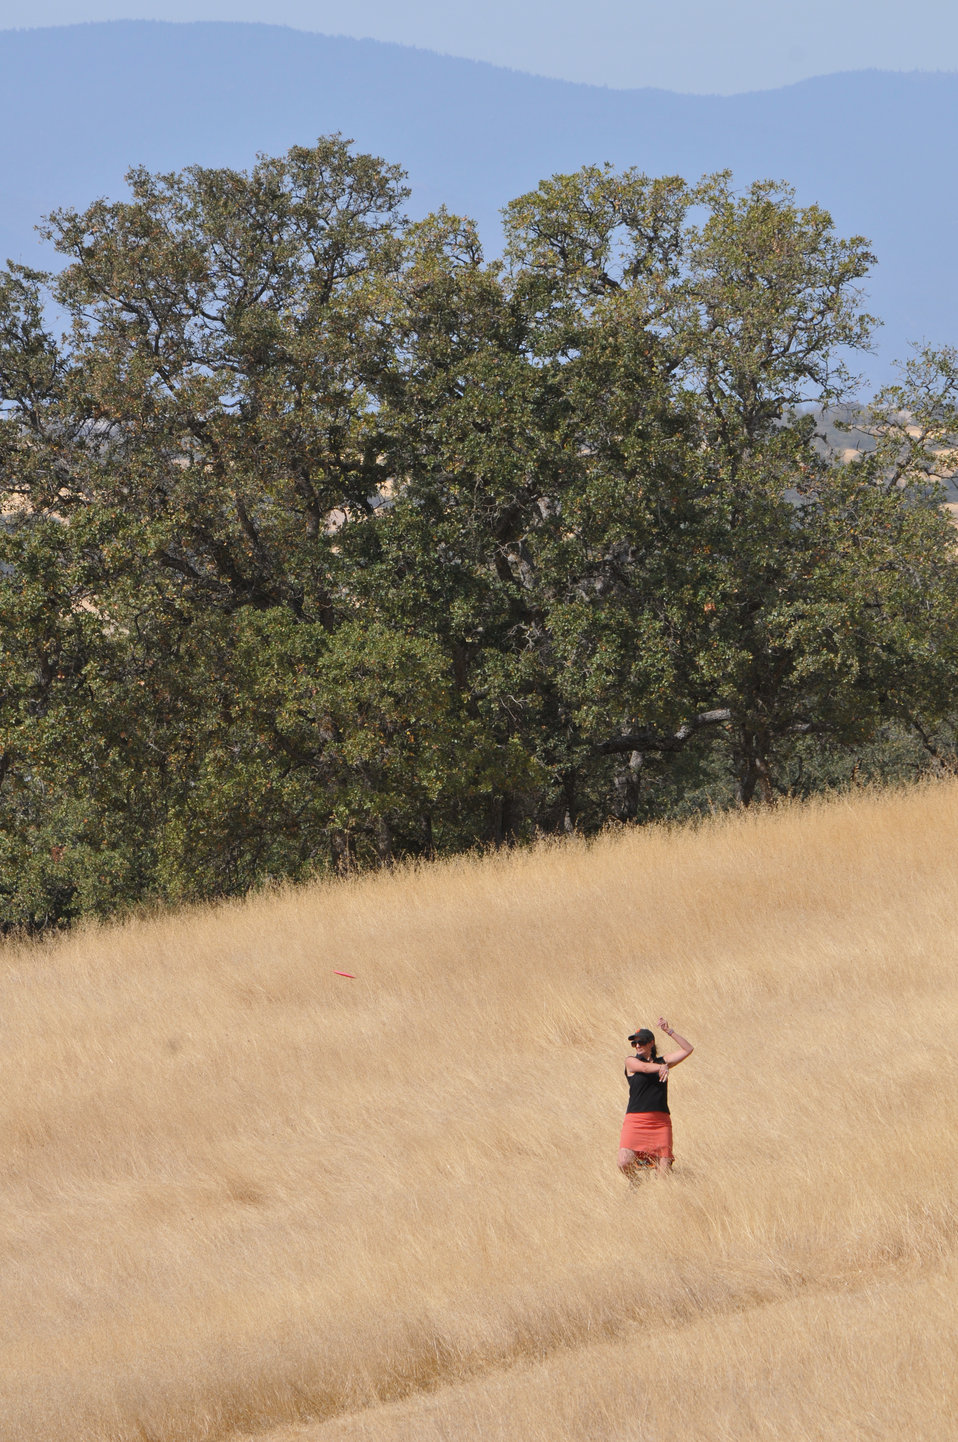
BLACK BUTTE LAKE, Calif. (Oct. 18, 2010) -- A disc golfer takes a toss during the Professional Disc Golf Association's Norcal Series Championships here Oct. 16. The U.S. Army Corps of Engineers Sacramento District’s Black Butte hosted the tournament Oct. 15-17 at its new disc golf course, built on park lands by The Orland Aces disc golf club under a partnership with the Corps. More than 150 disc golfers from as far as Texas competed in the tournament.